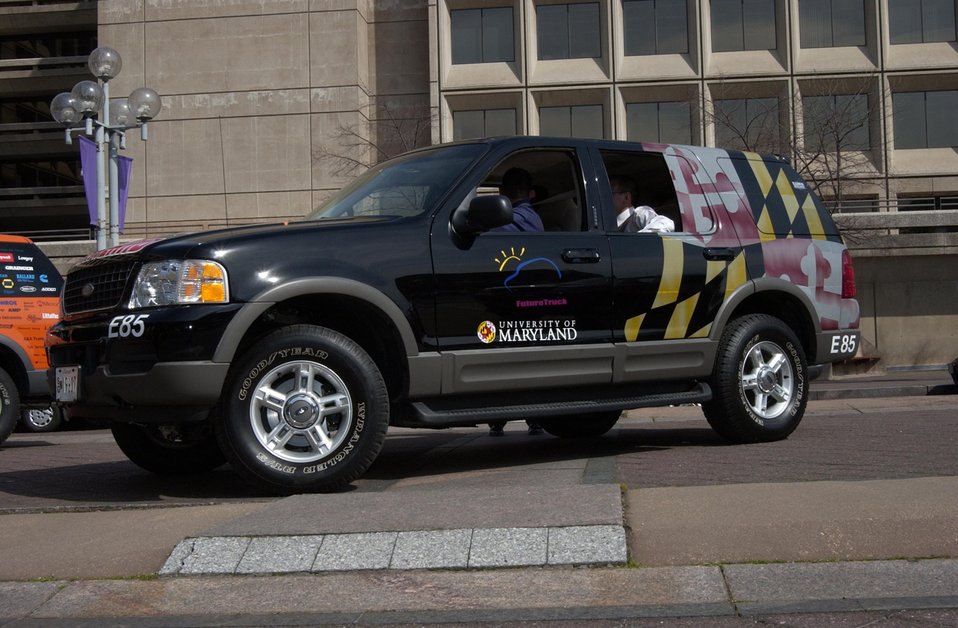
THE UNIVERSITY OF MARYLAND RE-ENGINEERED SUV PARTICIPATING IN THE FUTURE TRUCK 2004 EVENT.

ON MARCH 24, 2004, SECRETARY OF ENERGY ABRAHAM AND THE FORD MOTOR COMPANY HOSTED SEVEN STUDENT DESIGNED ENERGY EFFICIENT SPORT UTILITY VEHICLES (SUVS) PARKED OUTSIDE OF DOE HEADQUARTERS IN WASHINGTON, DC. THE STUDENT TEAMS, PART OF THE FUTURE TRUCK 2004 ENGINEERING COMPETITION, RE-ENGINEERED FORD EXPLORERS TO ACHIEVE LOWER-EMISSIONS AND AT LEAST 25% HIGHER FUEL ECONOMY, WITHOUT SACRIFICING PERFORMANCE, UTILITY AND SAFETY. THE UNIVERSITIES THAT PARTICIPATED WERE OHIO STATE, PENN STATE, MARYLAND, TENNESSEE, WISCONSIN-MADISON, VIRGINIA TECH AND WEST VIRGINIA.